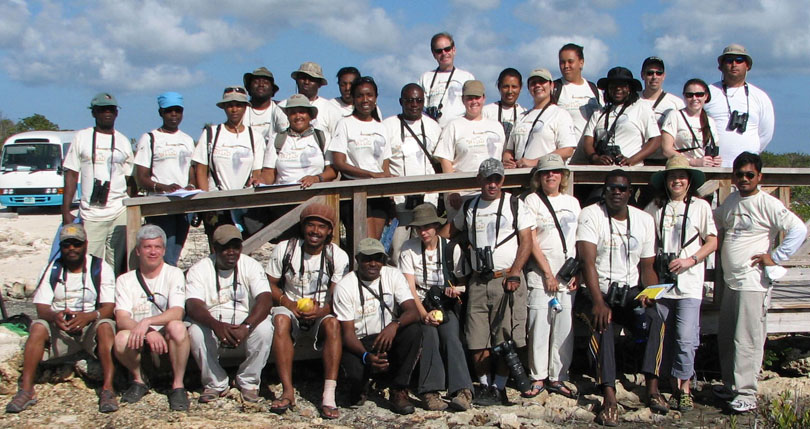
Participants at the SCSCB CWC Waterbird and Wetland Monitoring Training Workshop, February 23-27, 2011, Nassau,Bahamas Credit SCSCB

Participants at the SCSCB CWC Waterbird and Wetland Monitoring Training Workshop, February 23-27, 2011, Nassau, Bahamas.